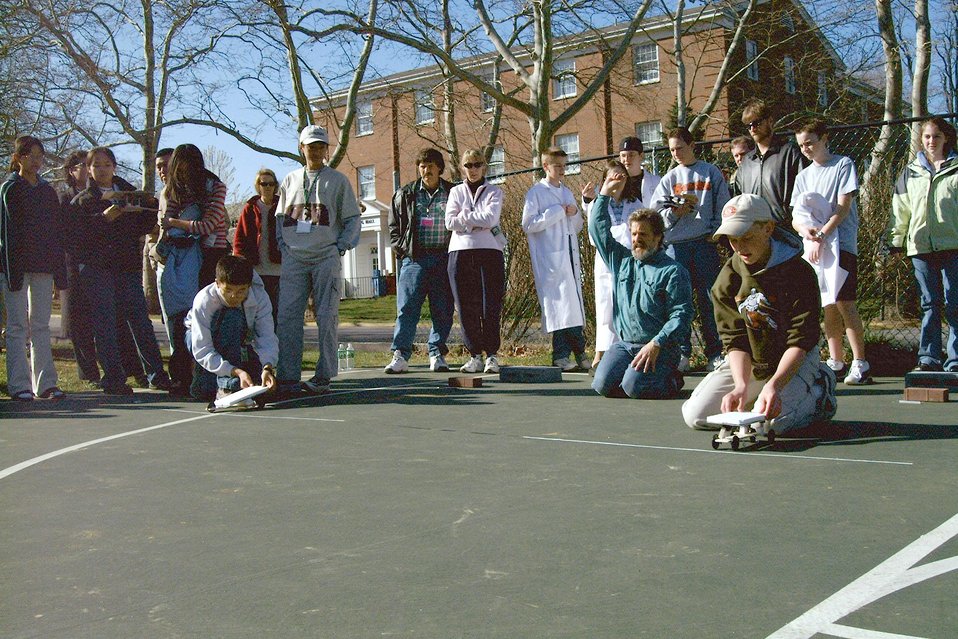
THE AUDIENCE AND PARTICIPANTS GATHER FOR THE SCIENCE BOWL'S MODEL SOLAR CAR RACE.

THE DEPARTMENT OF ENERGY SPONSORED THE FIRST NATIONAL MIDDLE SCHOOL SCIENCE BOWL ON MARCH 21-24, 2002 IN WASHINGTON, DC AT DOE HEADQUARTERS FORRESTAL BUILDING. ON MARCH 23RD THE COMPETITION INCLUDED A MODEL SOLAR CAR RACE HELD AT THE NATIONAL 4-H CONFERENCE CENTER, CHEVY CHASE, MD. THE MODEL CARS WERE DESIGNED AND CONSTRUCTED BY THE TEAM MEMBERS.